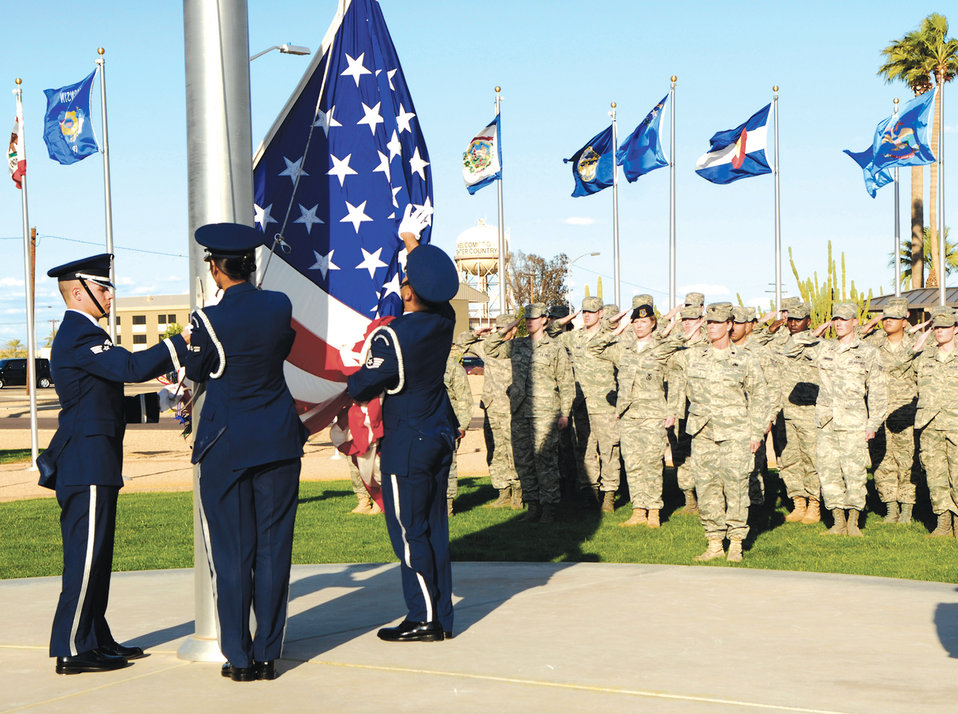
WASP celebrate Women's History Month

In observance of Women's History Month, the Luke Air Force Base honor guard performed a retreat ceremony March 4, 2010, at the base flag pole. Special guests attending the ceremony include members of the Women Airforce Service Pilots.